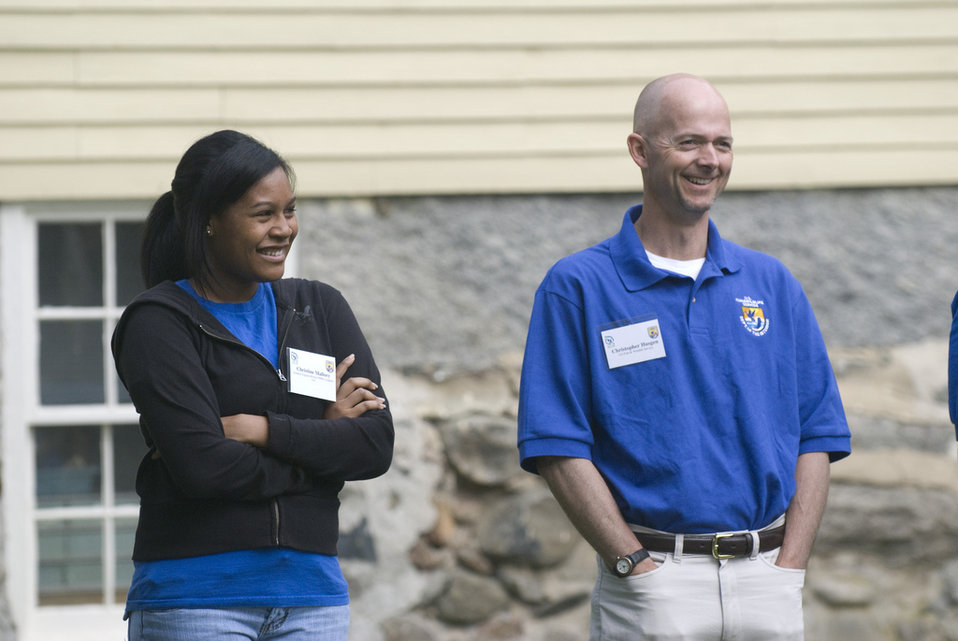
CIP student and service employee

U.S. Fish and Wildlife Service